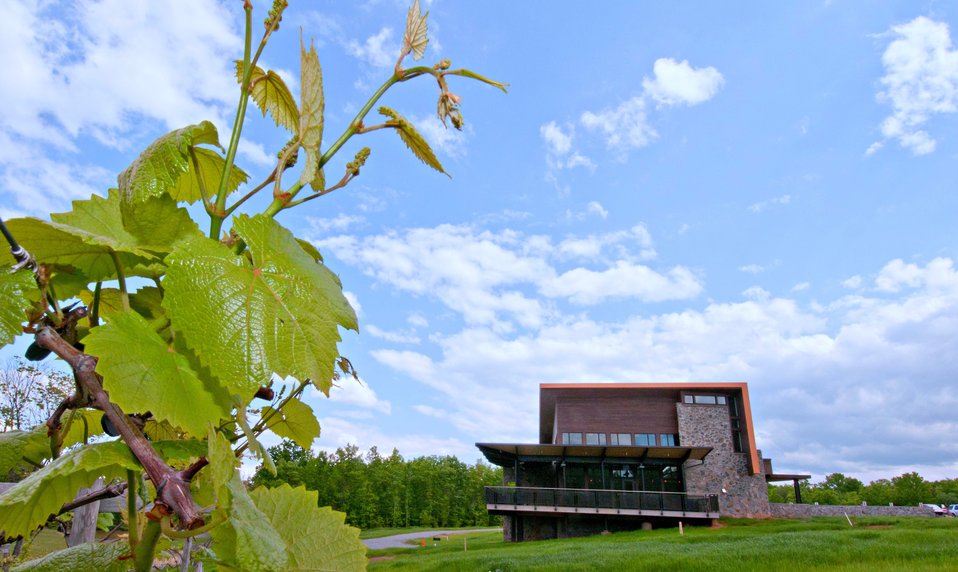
Cooper Vineyards in Louisa, VA is the first winery on the East Coast and the second in the country to be awarded the fourth and highest, Platinum certification by Leadership in Energy and Environmental Design (LEED).

From a Virginia Wine Board Marketing Office press release, “The process of building a LEED platinum certified building was initially more expensive and arduous than co-owners, Jacque Hogge, MD and Geoffrey Cooper, MD expected, but they were able to get financial assistance from the United States Department of Agriculture. “Know that there are grants available to help with the costs of sustainable building projects,” Hogge advises to other potential green wineries. Cooper Vineyards received 2 of the 3 USDA (U.S. Department of Agriculture Rural Development (RD) Rural Energy Financing program) grants awarded in Virginia in 2010 to help with the expenses of their construction.”

Rural Energy Financing program focuses on loan guarantees, loans and grants to agricultural producers, businesses, cooperatives and rural residents for renewable energy systems and to make energy efficiency improvements.
The tasting room and building collects rainwater from the roof; uses low flow water fixtures to reduce usage by 40%; utilizes structurally insulated panels for the roof and walls; heats and cools the entire building using a geothermal system that includes pipes that are embedded in the parking lot; low-voltage LED lighting with daylight and occupancy sensors provide ample light when it is needed; a solar panel array provides more than 15% of the energy needs for the building, and much of the construction materials are from local and recycled material sources. For more information about USDA please go to www.usda.gov, Rural Development and Rural Energy Financing. LEED was developed by the U.S. Green Building Council (USGBC) is a 501 c3 non-profit organization committed to a prosperous and sustainable future for our nation through cost-efficient and energy-saving green buildings.